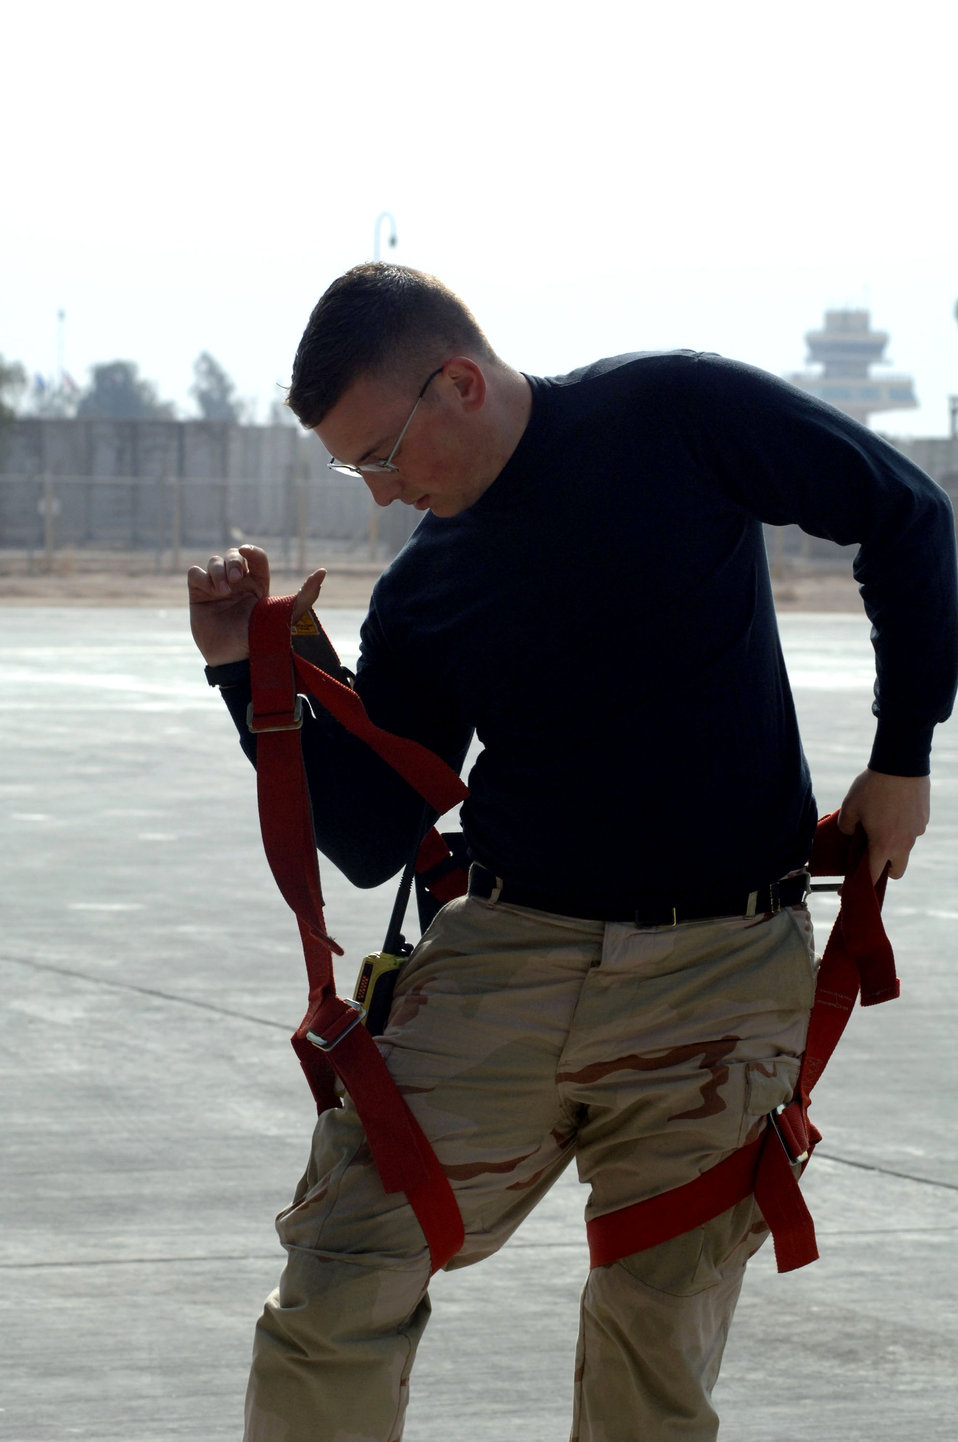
Balad Airmen take on galactic mission

Staff Sgt. Charlton Packham puts on a safety harness before using a condor lift to perform maintenance on a C-5 Galaxy here. The C-5 can carry up to 36 standard pallets and 81 troops simultaneously. Sergeant Packham is a 721st Air Mobility Operations Group Det. 5 maintainer deployed from Travis Air Force Base, Calif.